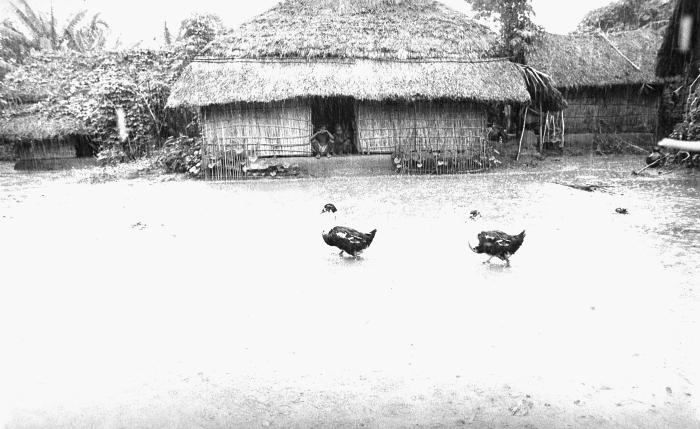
This image depicted some ducks 'on parade' as they passed in front of a typical Bangladesh middle-class home with its thatched roof and walls, and wooden infrastructure. It was a permanent dwelling, as opposed to the 'temporary' structures erected by an area's transient populous. This photograph provided by Dr. Stan Foster, and captured by Pierre Claquin, M.D., B.A.C., who at the time was a member of the World Health Organization's Smallpox Eradication Program. It was part of a series photographed by former E.I.S. officer, Stanley O. Foster M.D., M.P.H., and was one of a series entitled 'The Story of One Smallpox Jeep', which depicted the travails faced by the jeep, and its occupants of public health practitioners, as they road through the Bangladesh countryside in an attempt to eradicate smallpox from the country.